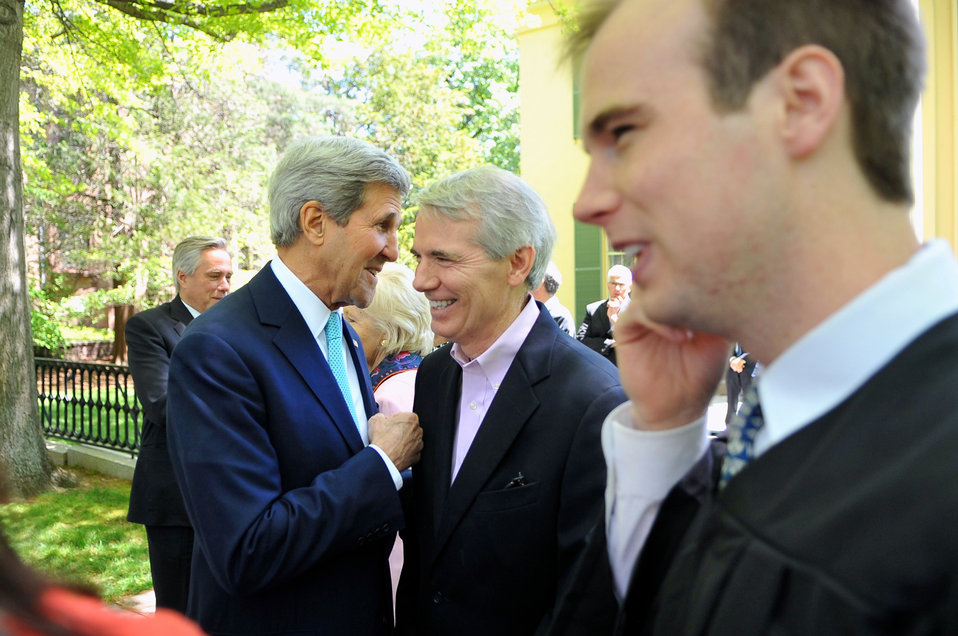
Secretary Kerry Speaks With Former Colleague Senator Portman at Yale University

U.S. Secretary of State John Kerry speaks with his former colleague, Senator Rob Portman of Ohio, as he and his son Will, foreground, wait to hear the Secretary speak at the Yale University Class Day ceremonies in New Haven, Connecticut, on May 18, 2014.